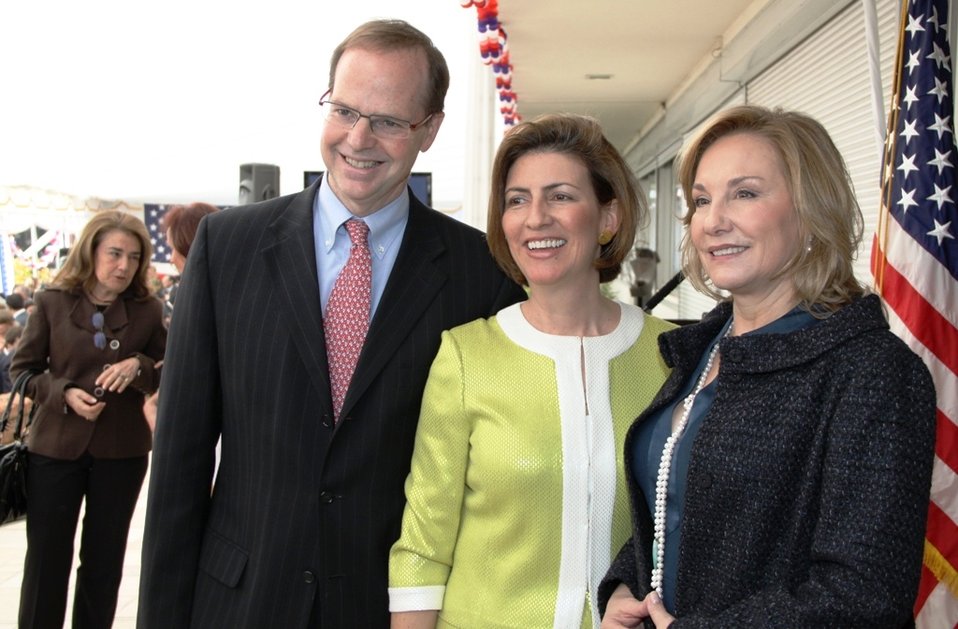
Ambassador Simons, Victoria cardenas Simons, and Chile's First Lady Cecilia Morel Pose for a Photo

U.S. Ambassador to Chile Paul Simons, his wife, Victoria Cardenas Simons, and Chile’s First Lady Cecilia Morel, pose for a photo during the U.S. Independence Day reception at the Ambassador's residence in Santiago, Chile, on July 2, 2010.